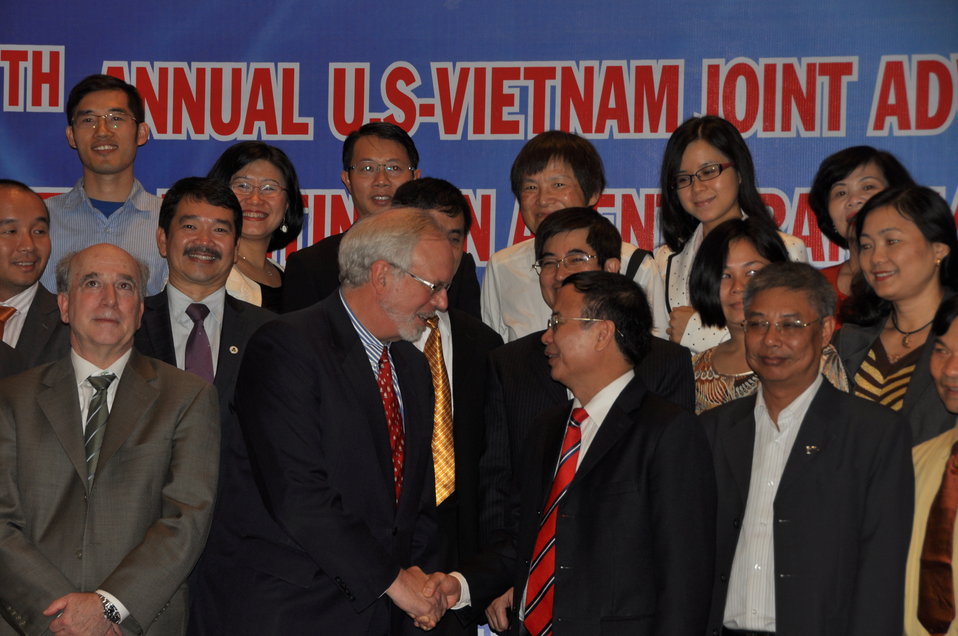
U.S. Ambassador to Vietnam David B. Shear and Dr. Le Ke Son, Office 33 Director, shake hands at the opening ceremony of the 8th JAC meeting.

Danang, December 4, 2013.